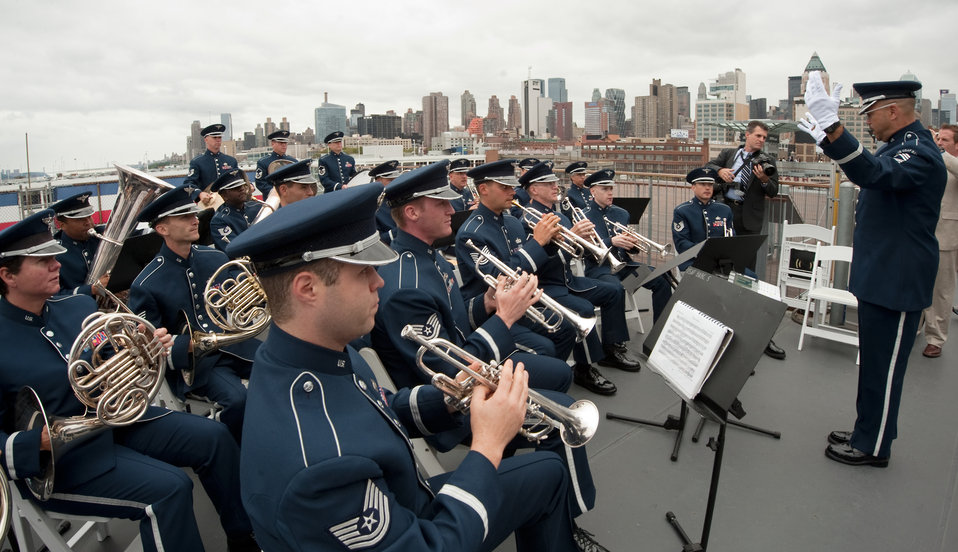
Air Force Week New York City Proclamation Ceremony

The Air Force Band performed during the Air Force Week New York City proclamation ceremony on the flightdeck of the USS Intrepid on Aug. 24, 2010. The event at the Intrepid Sea, Air & Space Museum was highlighted by a six-ship flyover by the USAF Thunderbirds. The Honorable Michael Donley, Secretary of the Air Force attended, along with General Raymond Johns, Commander of Air Mobility Command. The Police Commissioner of the City of New York, the Honorable Raymond Kelly, represented NYC. Mr. Greg Kelly of